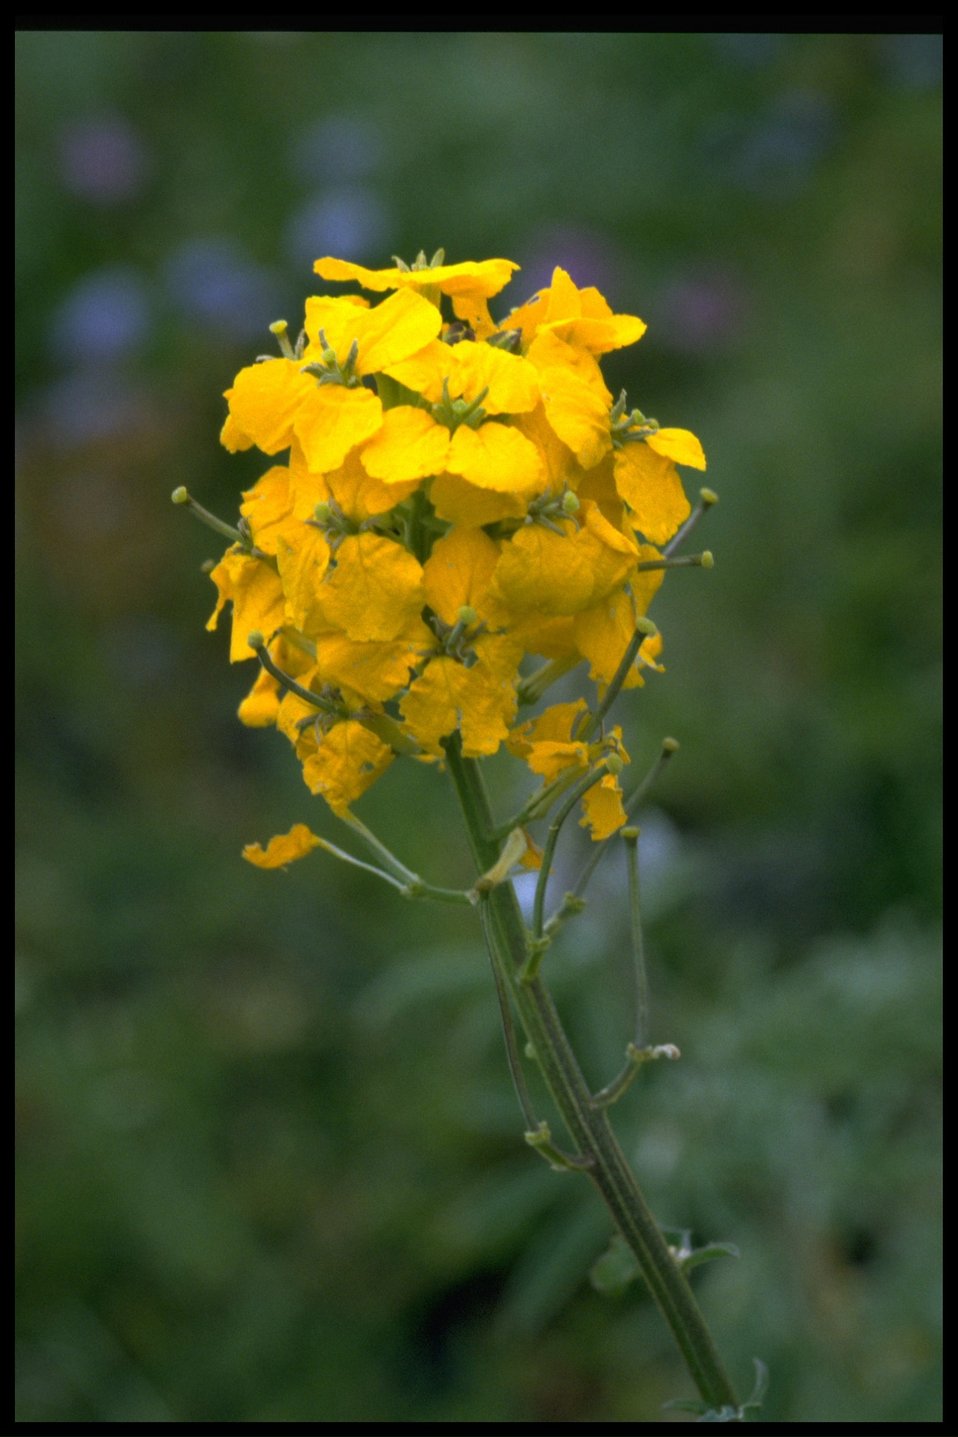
Closeup shot of Erysimum cheiranthoides.